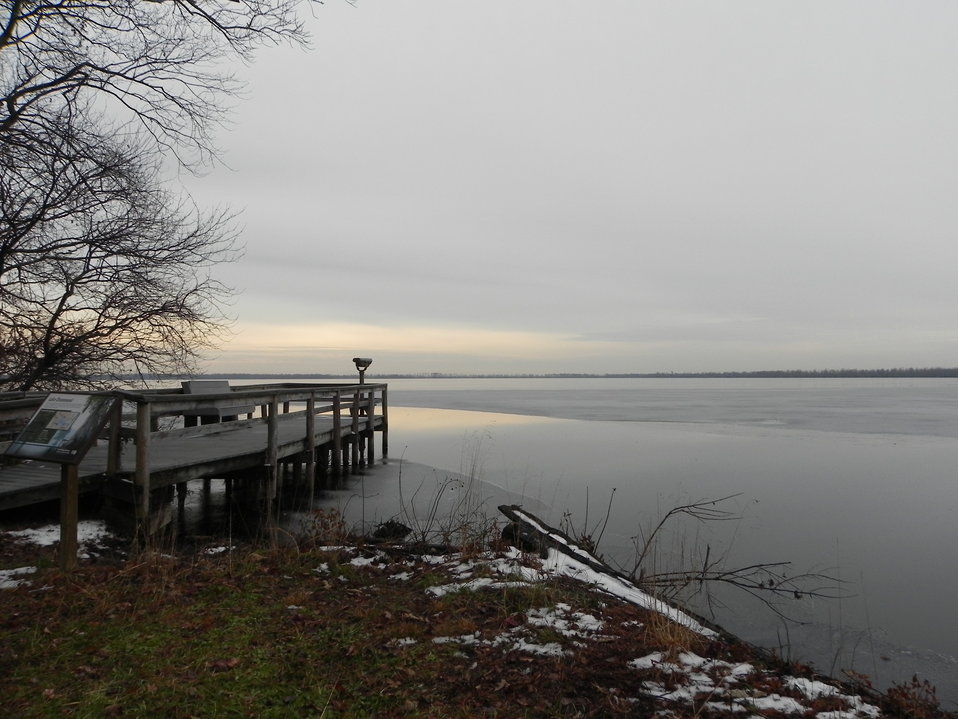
Washington Ditch Pier

Great Dismal Swamp National Wildlife Refuge, VA.